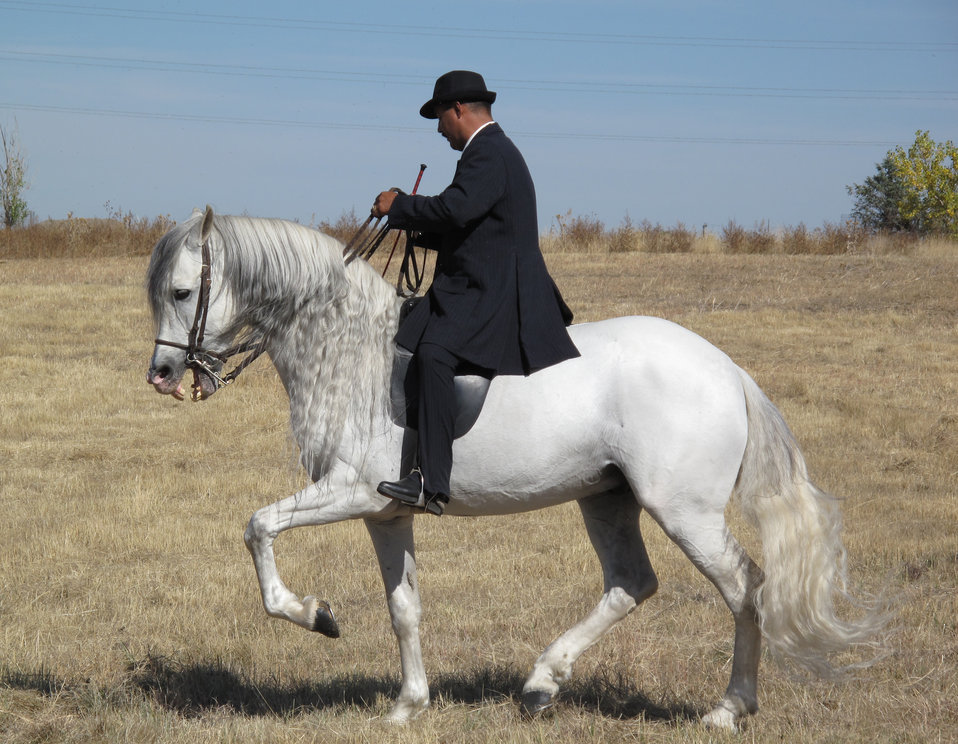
Dancing Horses

Jose and his dancing horses at Refuge Round-Up 2010.